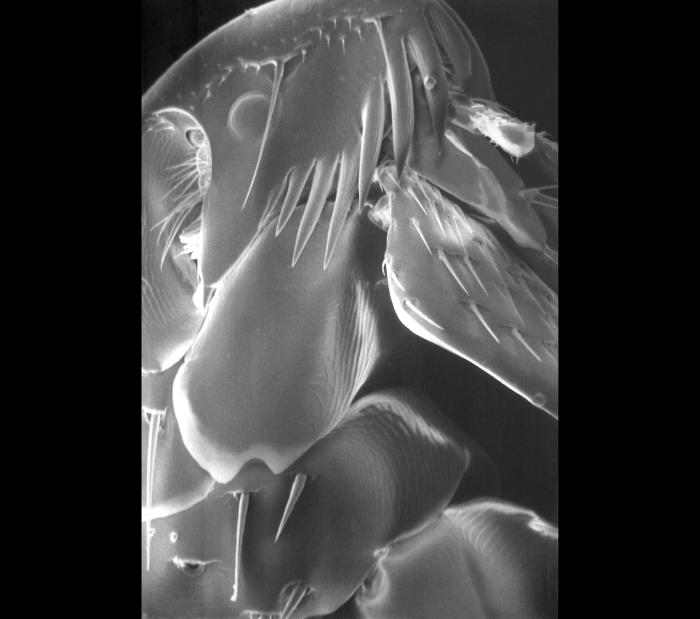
Scanning electron micrograph (SEM) of a parasitic flea.